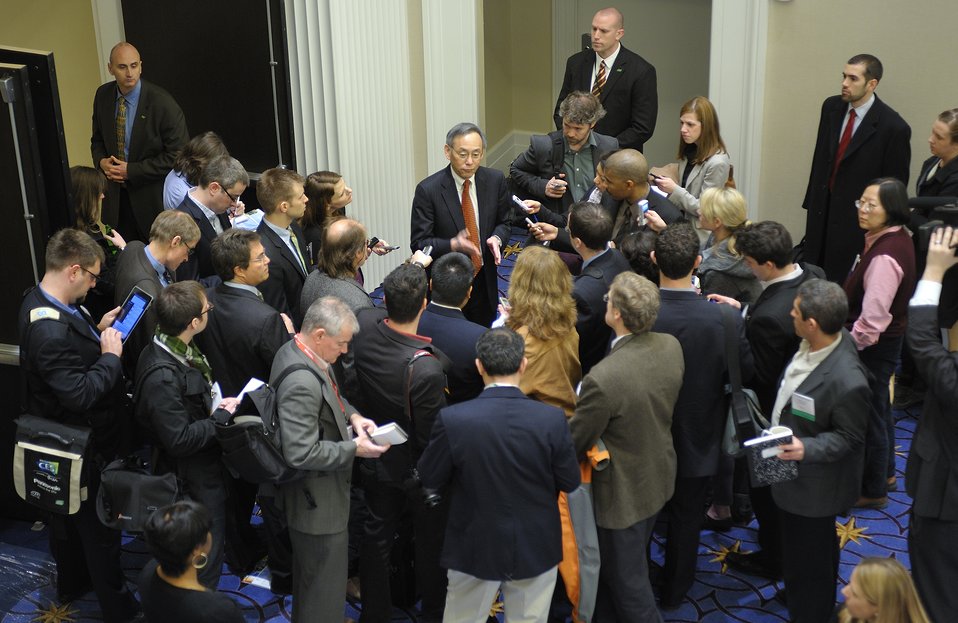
ARPA-E Energy Innovation Summit 2011, 23 of 83

Steven Chu, Secretary, United States Department of Energy holds an impromptu press avail after his Keynote.